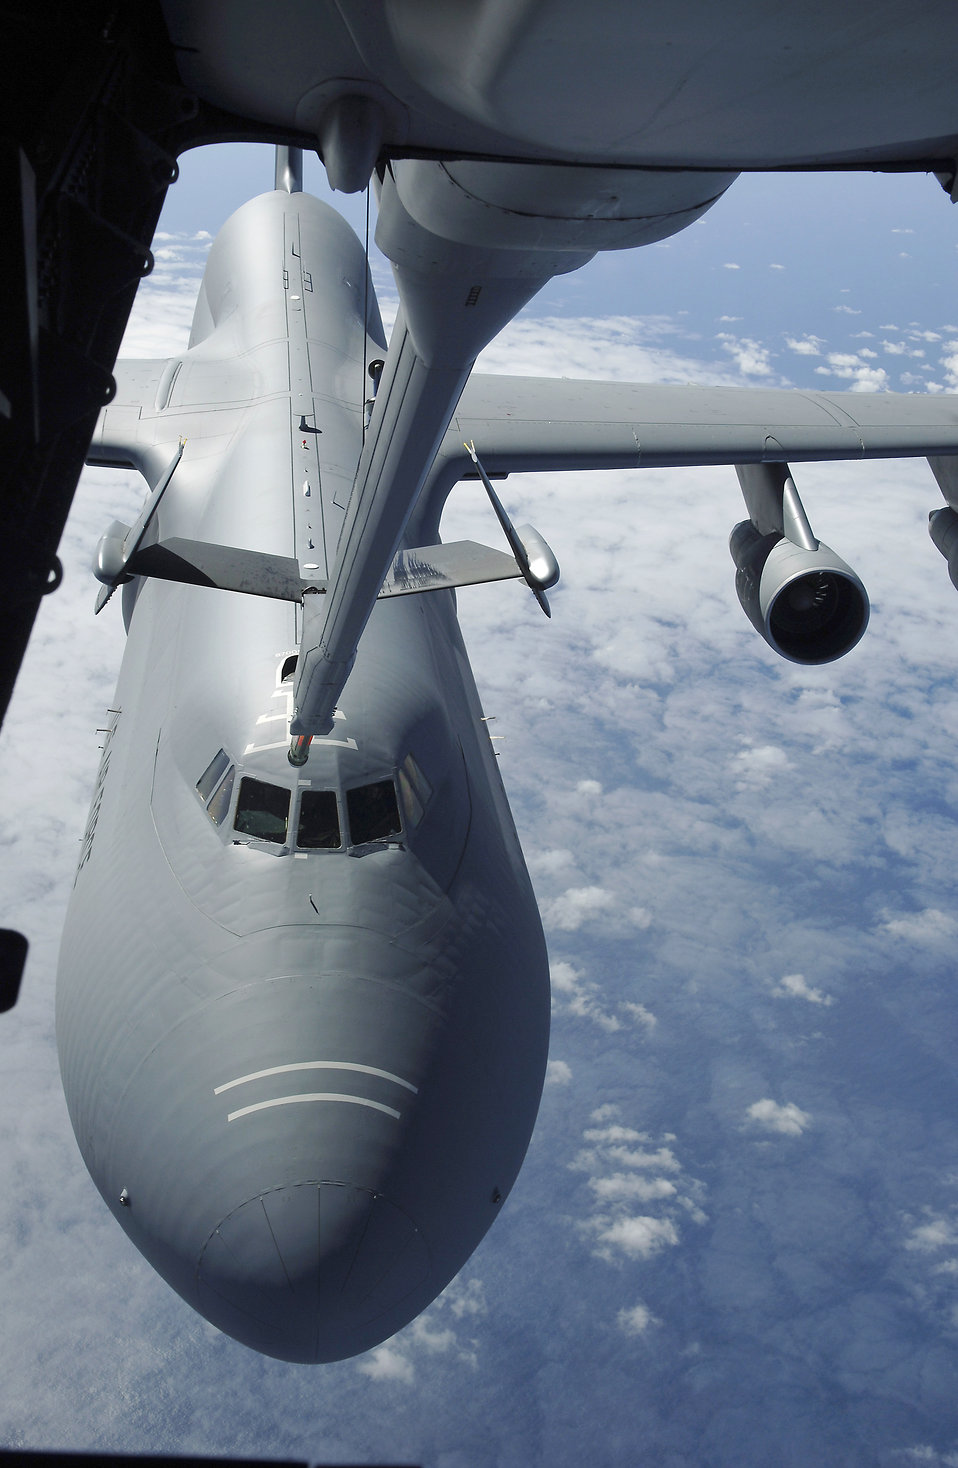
Blended teams blaze new trail at Rodeo 2007

A KC-10 Extender flown by a blended crew from McGuire Air Force Base, N.J., prepares to refuel a C-5 Galaxy July 23 from the 436th Airlift Wing at Dover AFB, Del. The blended crew comprises Airmen from both the active duty 305th Air Mobility Wing and the Air Force Reserve 514th AMW at McGuire AFB. There are two blended teams competing at Air Mobility Rodeo 2007. The other blended team is from Charleston AFB, S.C.